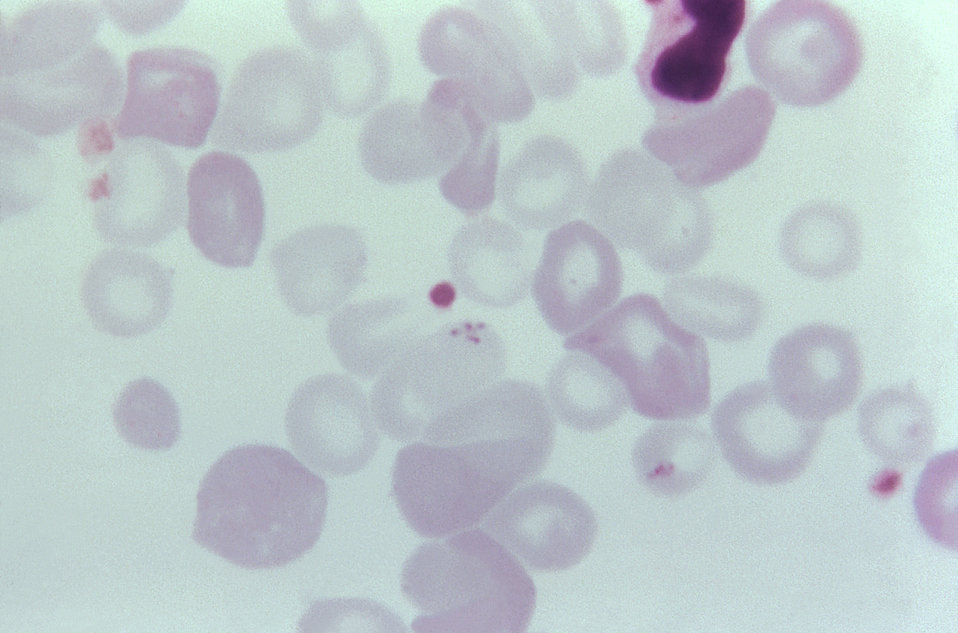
This blood smear micrograph reveals a Babesia sp. tetrad formation.

Babesiosis, which can be confused with malaria, is caused by hemo-protozoan parasites of the genus Babesia. While more than 100 species have been reported, B. microti and B. divergens have been identified in most human cases.